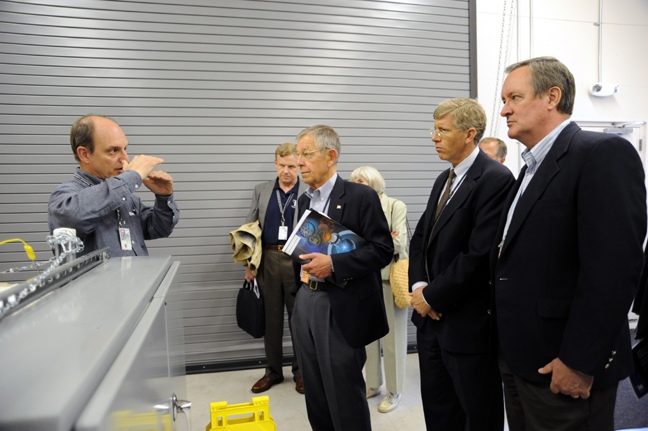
P-6251-18 72dpi

INL researcher Steve Herring talks about his work on producing process heat and hydrogen using nuclear power and water to Idaho Sen. Mike Crapo (right), Deputy Secretary Poneman and Ohio Sen. George Voinovich (left).